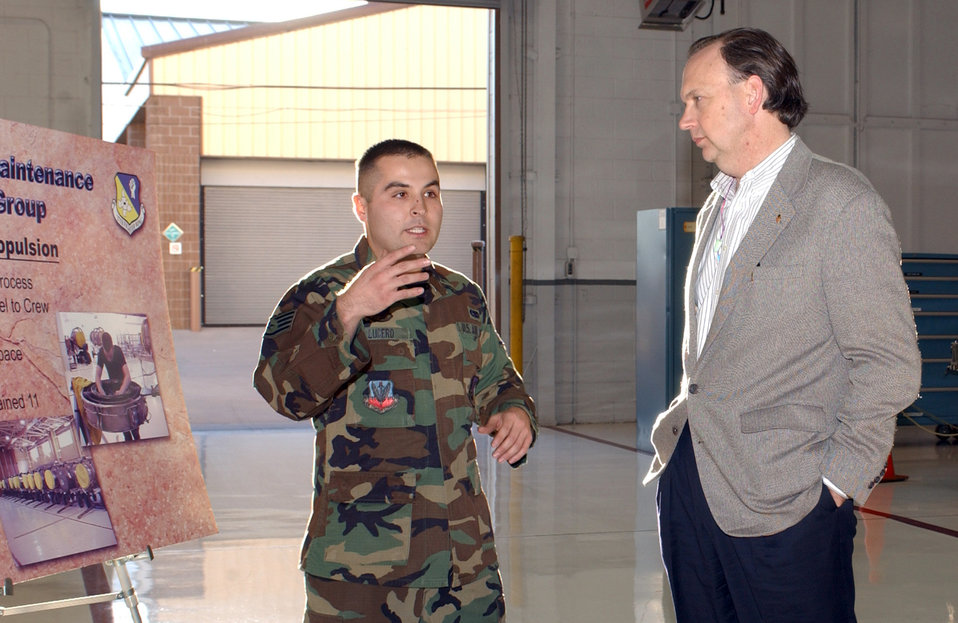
Leadership visit

CANNON AIR FORCE BASE, N.M. (AFPN) -- Staff Sgt. Andrew Lucero, from the 27th Component Maintenance Squadron, briefs Assistant Secretary of the Air Force William C.